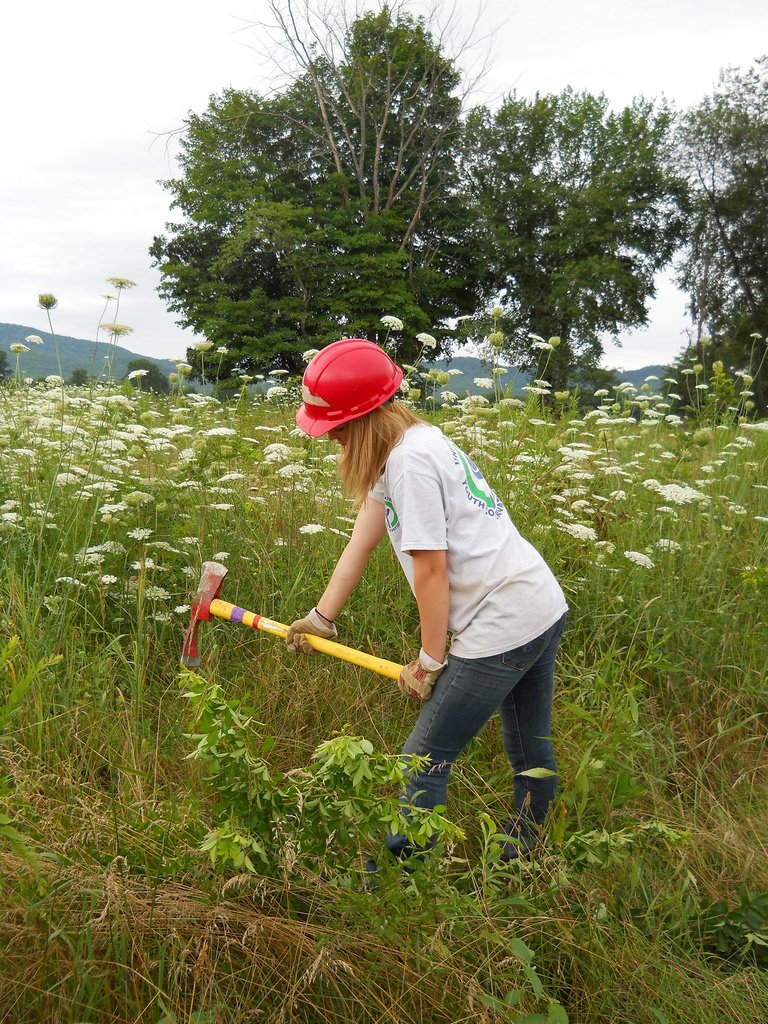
Controlling invasive species

U.S. Fish and Wildlife Service